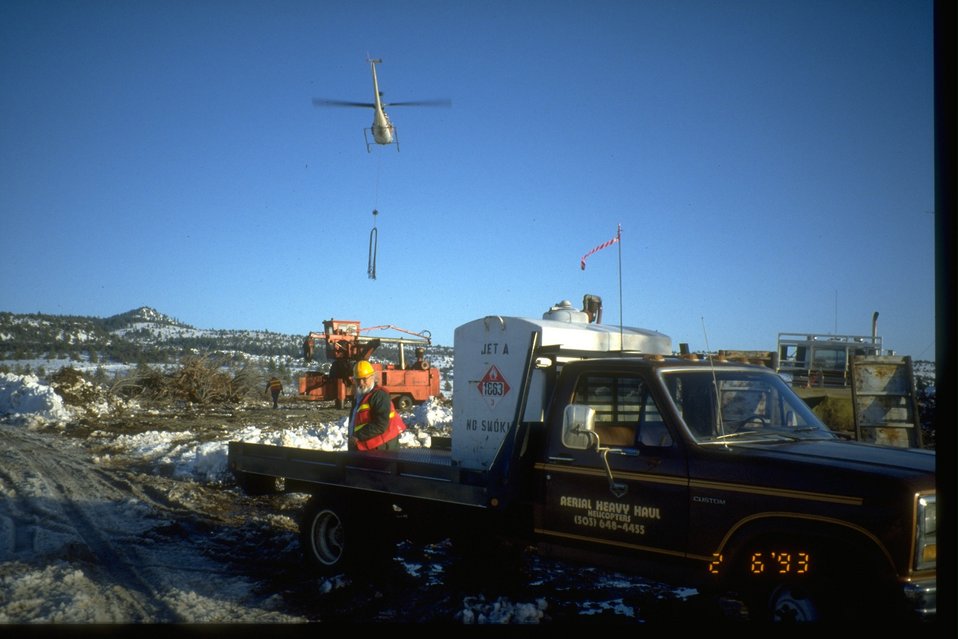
Helicoptering juniper logs in central Oregon.